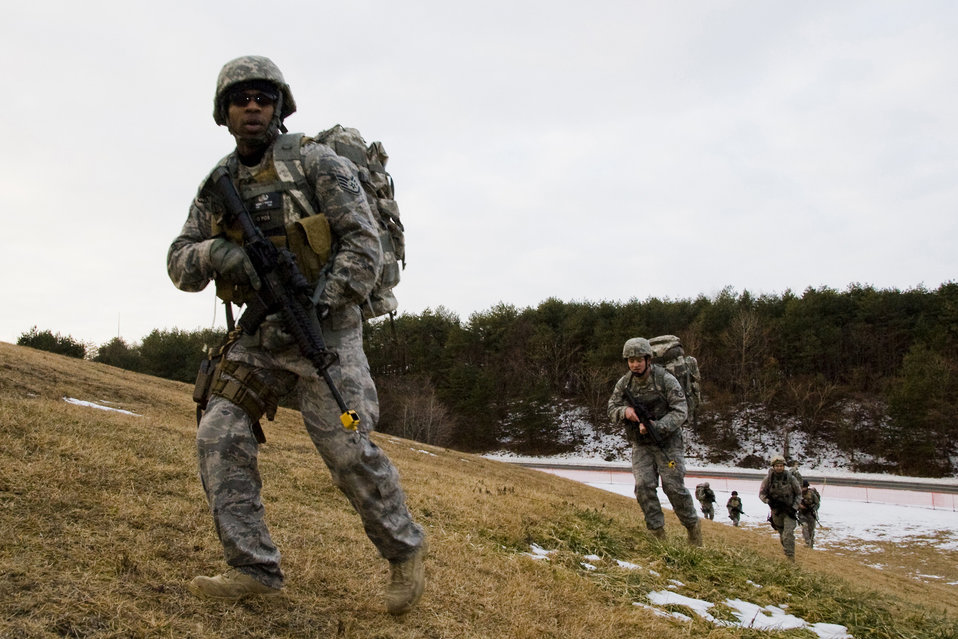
Misawa EOD unit keeps physically fit

Staff Sgt. Michael Overton leads a tactical formation during a ruck march Jan. 8, 2010, at Misawa Air Base, Japan. He is an explosive ordnance disposal craftsman with the 35th Civil Engineer Squadron, Spacing is key during tactical formations; if someone faces danger, the rest of the formation can respond accordingly at a reasonable distance.